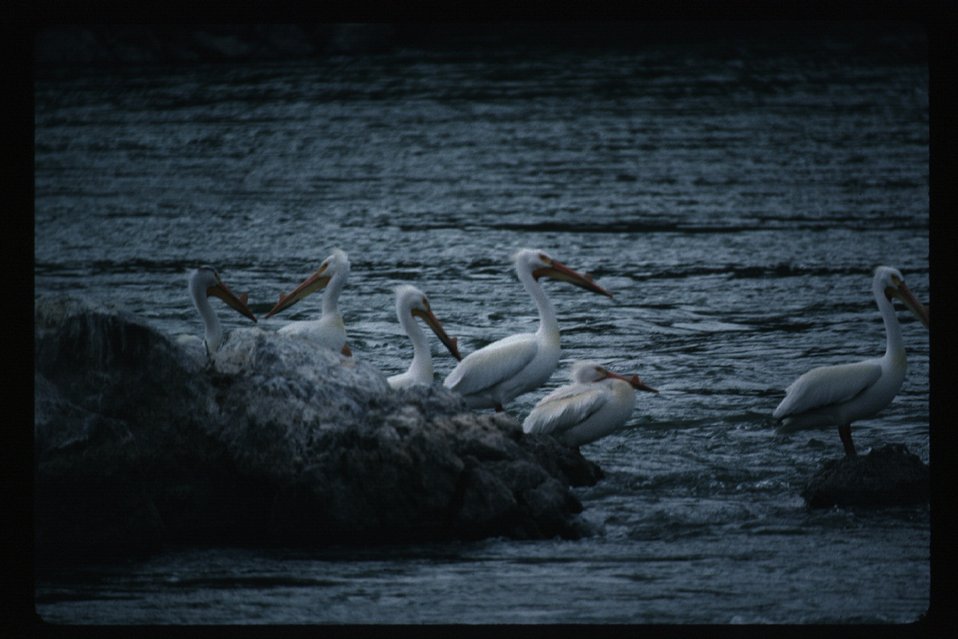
Pelicans on Snake River Wildlife USRD Upper Snake River District